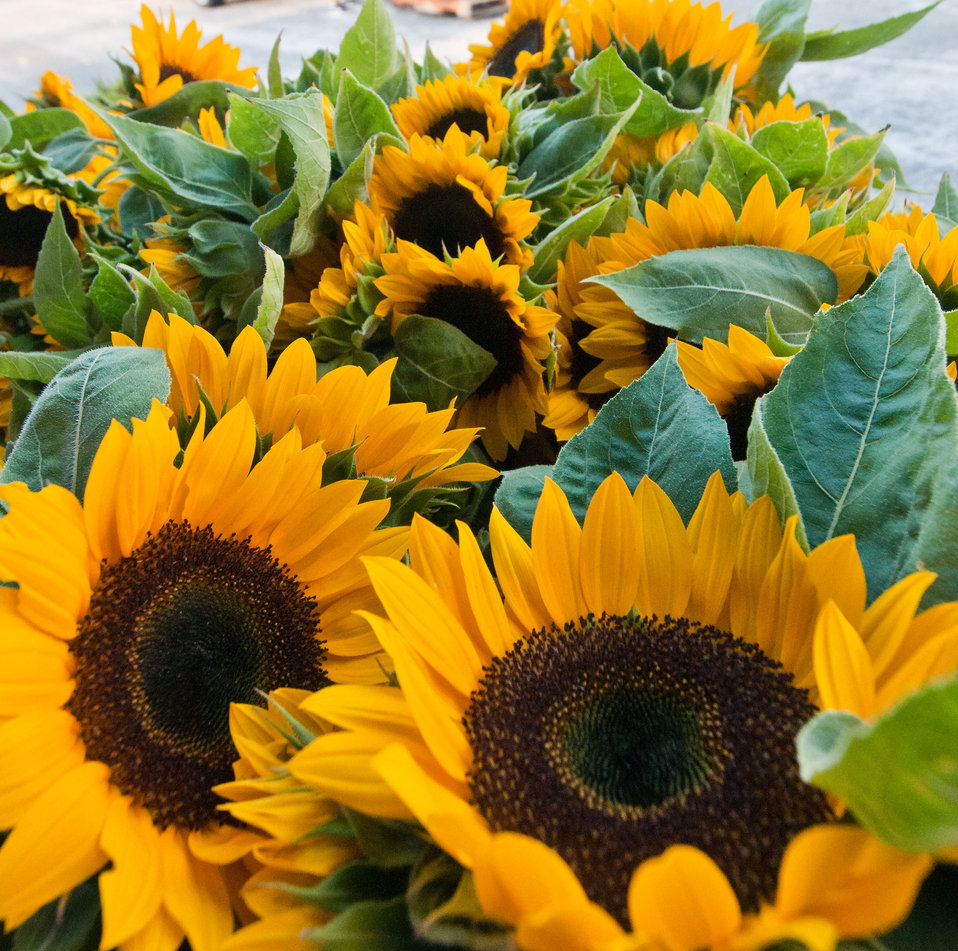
Worden Farm (www.wordenfarm.com) fresh picked organic sunflowers (decorative and edible) are ready for sale at the Saturday Morning Market, in St. Petersburg, FL, on April 14, 2012. Worden Farm is a family farm that provides certified organic produce to Southwest Florida through community supported agriculture (CSA) membership programs and retail sale at several farmer’s (community) markets. Chris Worden, Ph.D. and Eva Worden, Ph.D. founded and operates the farm that employs more than 20 people. Growing certified organic crops in the coastal sandy soil has required them to develop innovative farming techniques which help the farm as well as assist the studies of universities and farm industry. There are several Worden Farm apprenticeships that provide hands-on training in all aspects of the farm, to include direct marketing at the Saturday Morning Market, or other market sites. The farm also holds culinary and gardening workshops, and other interactive educational events. One of their organic certifications is from the U.S. Department of Agriculture (USDA) and they have partnered with the USDA Natural Resources Conservation Service (NRCS) for soil conserving windbreaks and long tunnel structures to nurture seedlings and extend the growing season.